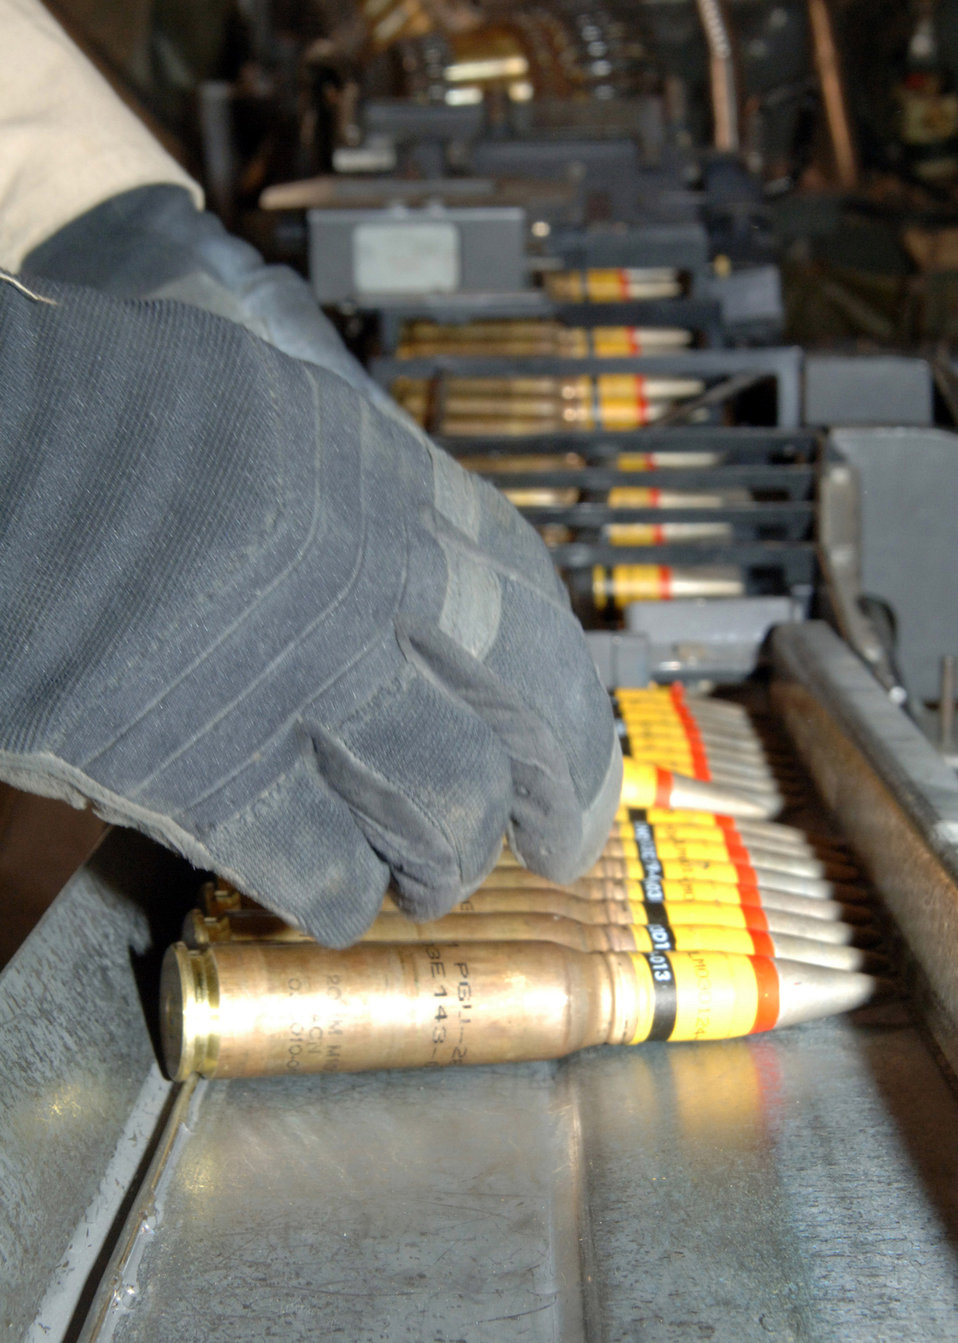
New ammo improves pilot safety, reduces collateral damage

High explosive incendiary PGU-28A/B 20mm cannon rounds are fed through a replenisher into a universal ammunition loading system. The UALS is then used by weapons loaders to transfer the cannon rounds directly into F-16 Fighting Falcon weapon systems. The new ammo allows for higher velocity, a greater standoff distance and increased safety for pilots, all contributing to greater effectiveness while providing close-air support. Its use Feb. 26 against insurgents east of Baghdad, Iraq, marked the first in battle for Air Force F-16 Fighting Falcon pilots.